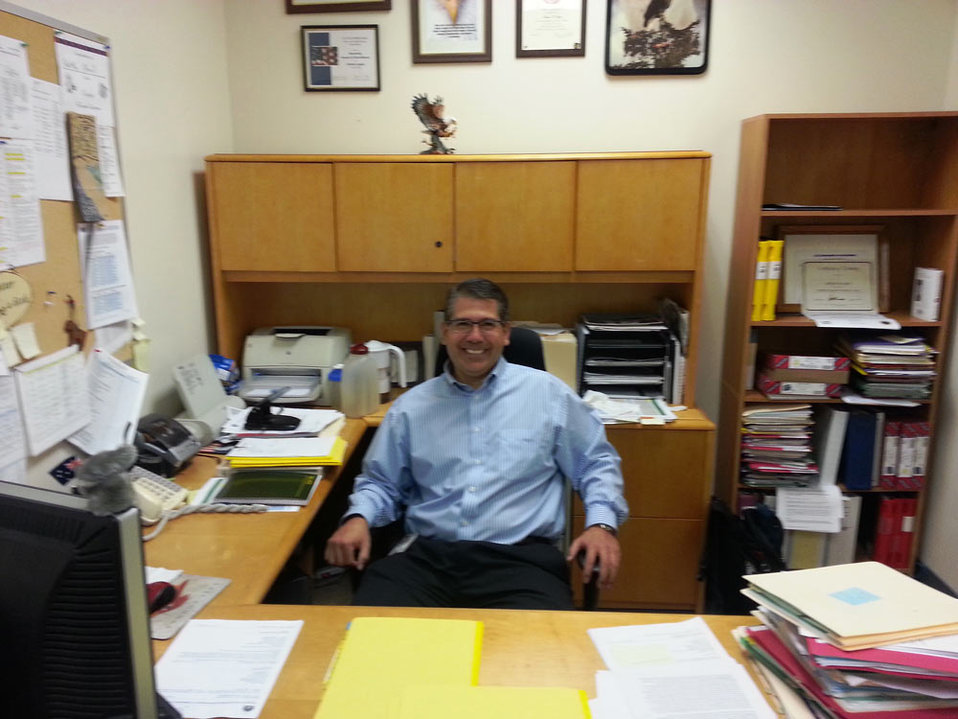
Adrian Lopez -- Southwest Region

Adrian Lopez, a Budget Analyst/Grant Specialist in Region 2 Ecological Services, served in the Navy.